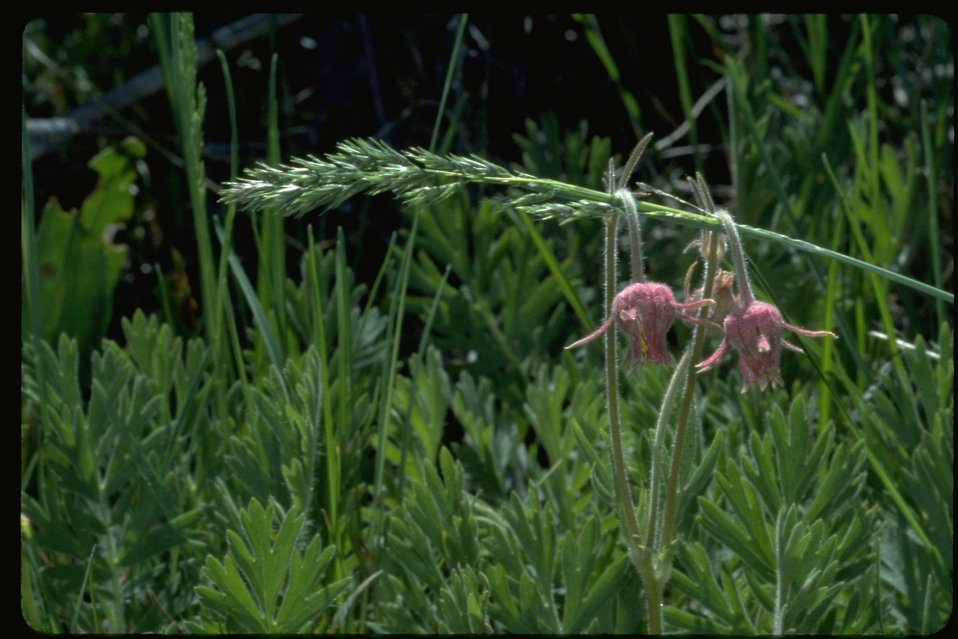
Long shot of Prairie Smoke wildflowers in early stage.